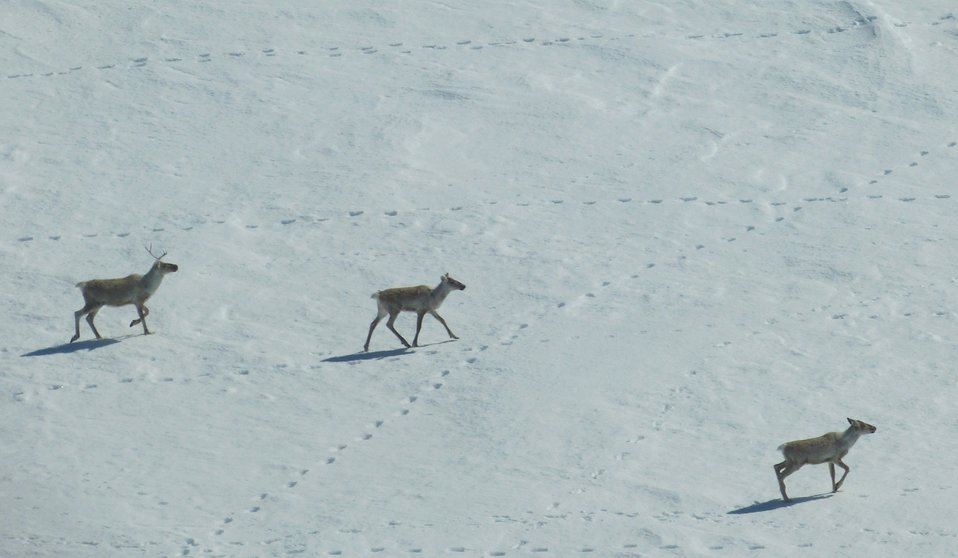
Caribou in Kilbuck Mountains on Yukon Delta National Wildlife Refuge

Photo credit: Kristine Sowl
USFWS, Yukon Delta National Wildlife Refuge